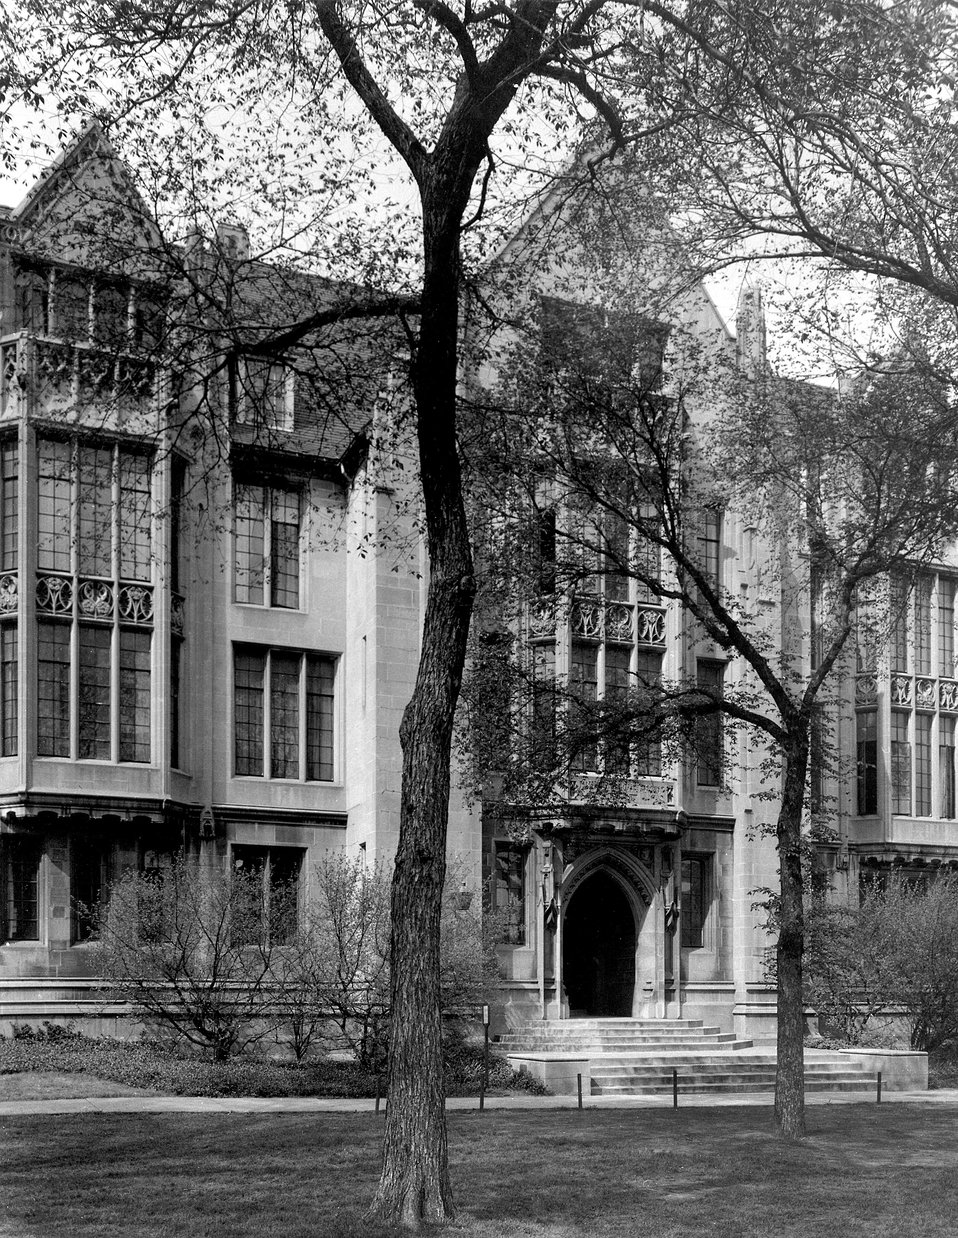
The Council Tree in front of Eckhart Hall on The University of Chicago campus.